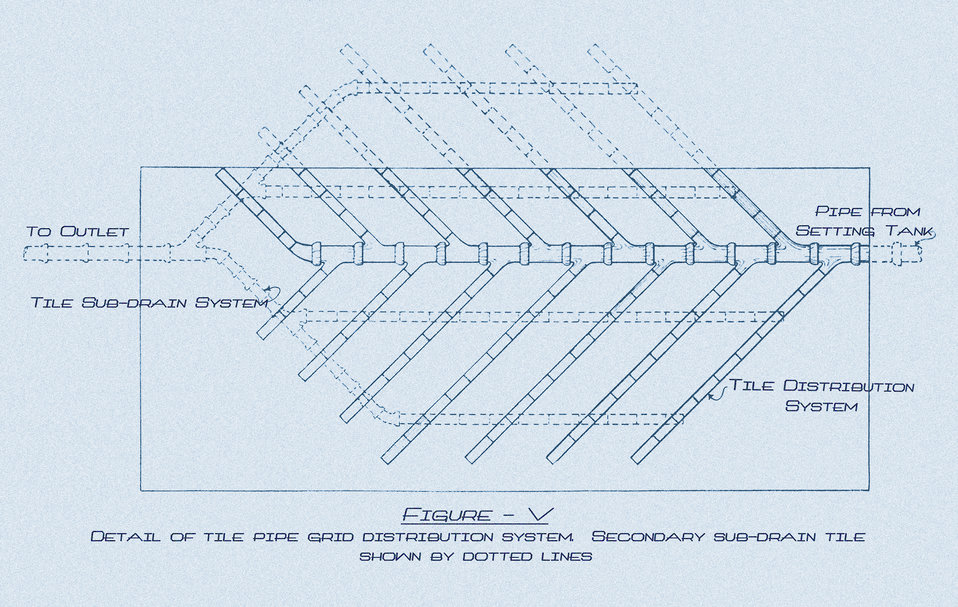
This historic diagram, which had been digitally enhanced and colorized, depicted one method of sewage disposal recommended for farm homes. The illustration showed the details of a pipe-grid distribution system. Published in 1914, this was one of a series of instructional drawings used by the Minnesota Board of Health to train the state's public health workers.